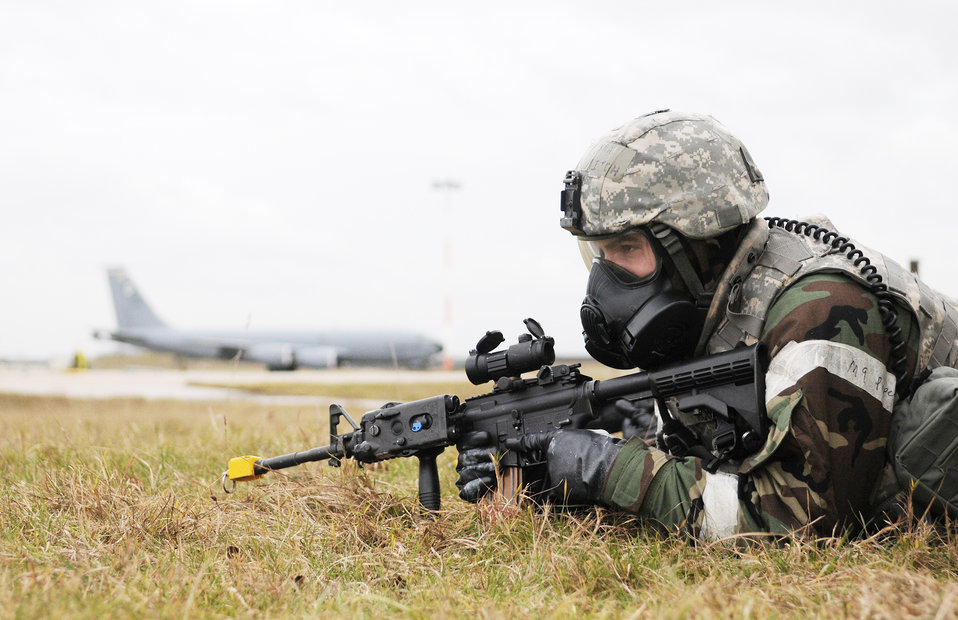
The first line of defense

Senior Airman Mitchell Nichols watches for opposing forces after a